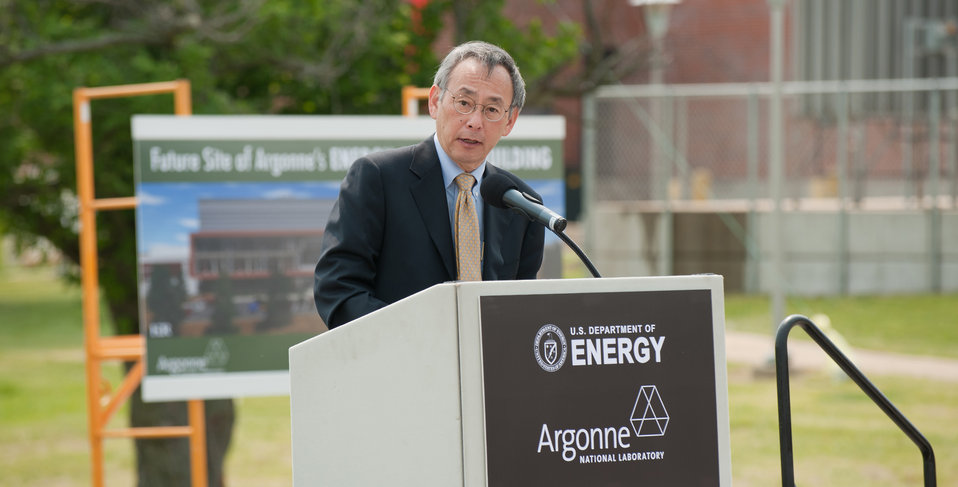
Energy Secretary Steven Chu speaks at the groundbreaking ceremony for Argonne National Laboratory's Energy Sciences Building.
The Energy Sciences building will house some 200 research personnel dedicated to addressing the world's most critical energy challenges. The facility will be key in getting our scientists and engineers to deliver on our mission; doing basic science to generate, supply, transmit, store and use new energy. The building will bring together many different scientists to collaborate and create new knowledge for this new economy. The building is scheduled to be complete in 2013.